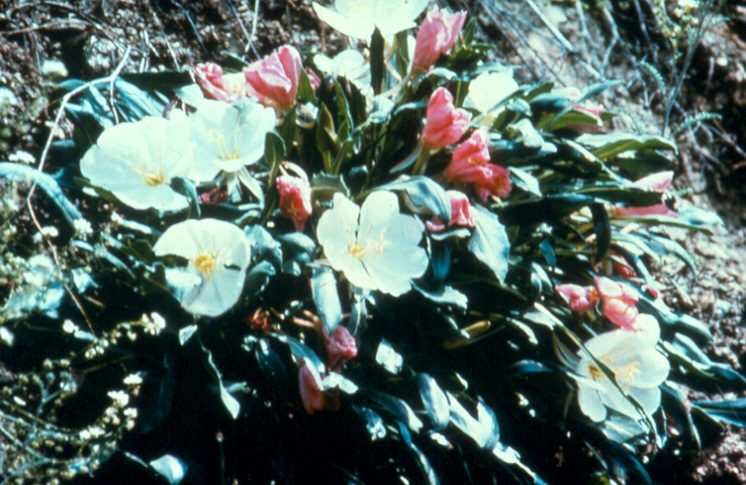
Evening Primrose Salmon FIeld Office UCSC Upper Columbia Salmon Clearwater District